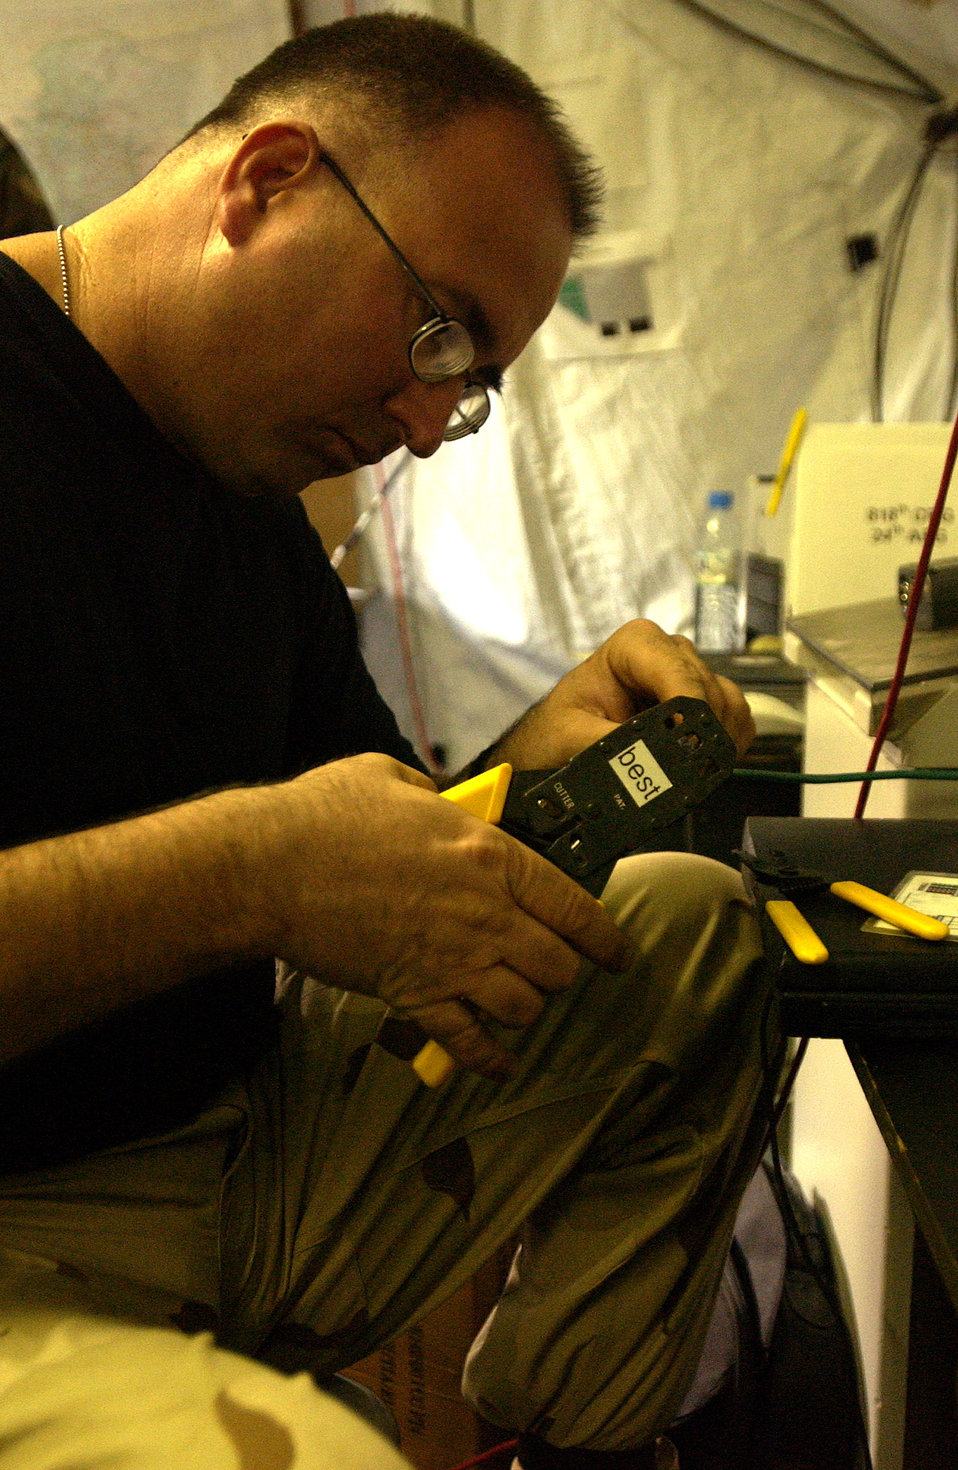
Pakistan relief

CHAKLALA AIR BASE, Pakistan (AFPN) -- Tech. Sgt. Rick Harbaugh installs a communication cable in support of earthquake-relief efforts here. On Oct. 26, Sergeant Harbaugh, from the 818th Contingency Response Group at McGuire Air Force Base, N.J., helped the Air Force deliver assistance to Pakistan following the Oct. 8 earthquake.